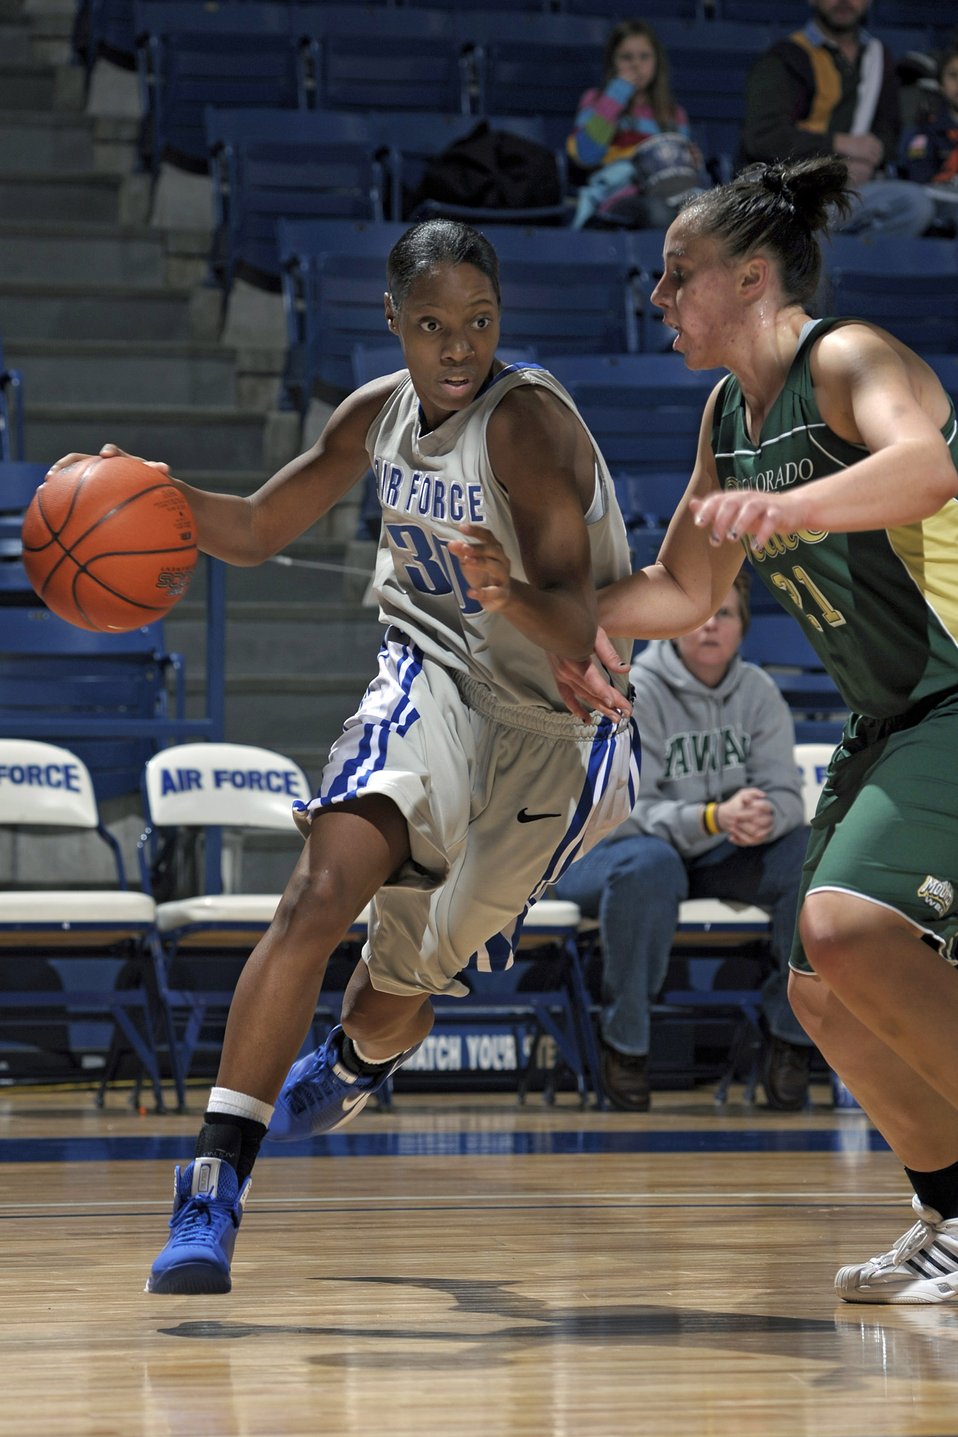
Academy basketball

Freshman guard Jamela Satterfield drives around a defender during the Falcons 55-50 loss to the Colorado State Rams Jan 20 at Clune Arena at U.S. Air Force Academy, Colo. The Falcons dropped to 0-4 in Mountain West Conference action and 4-14 overall.